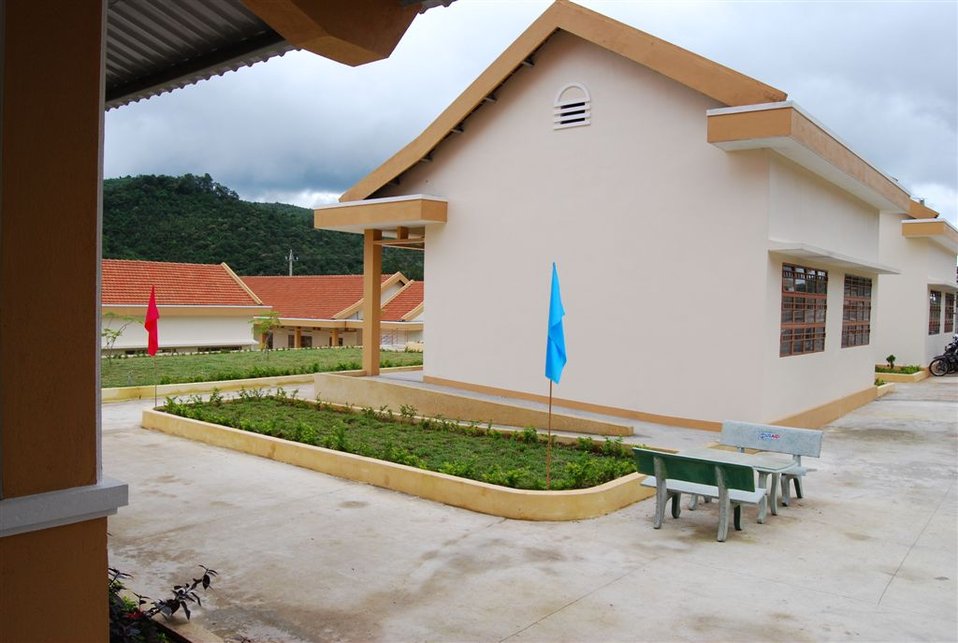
Kon Ray School